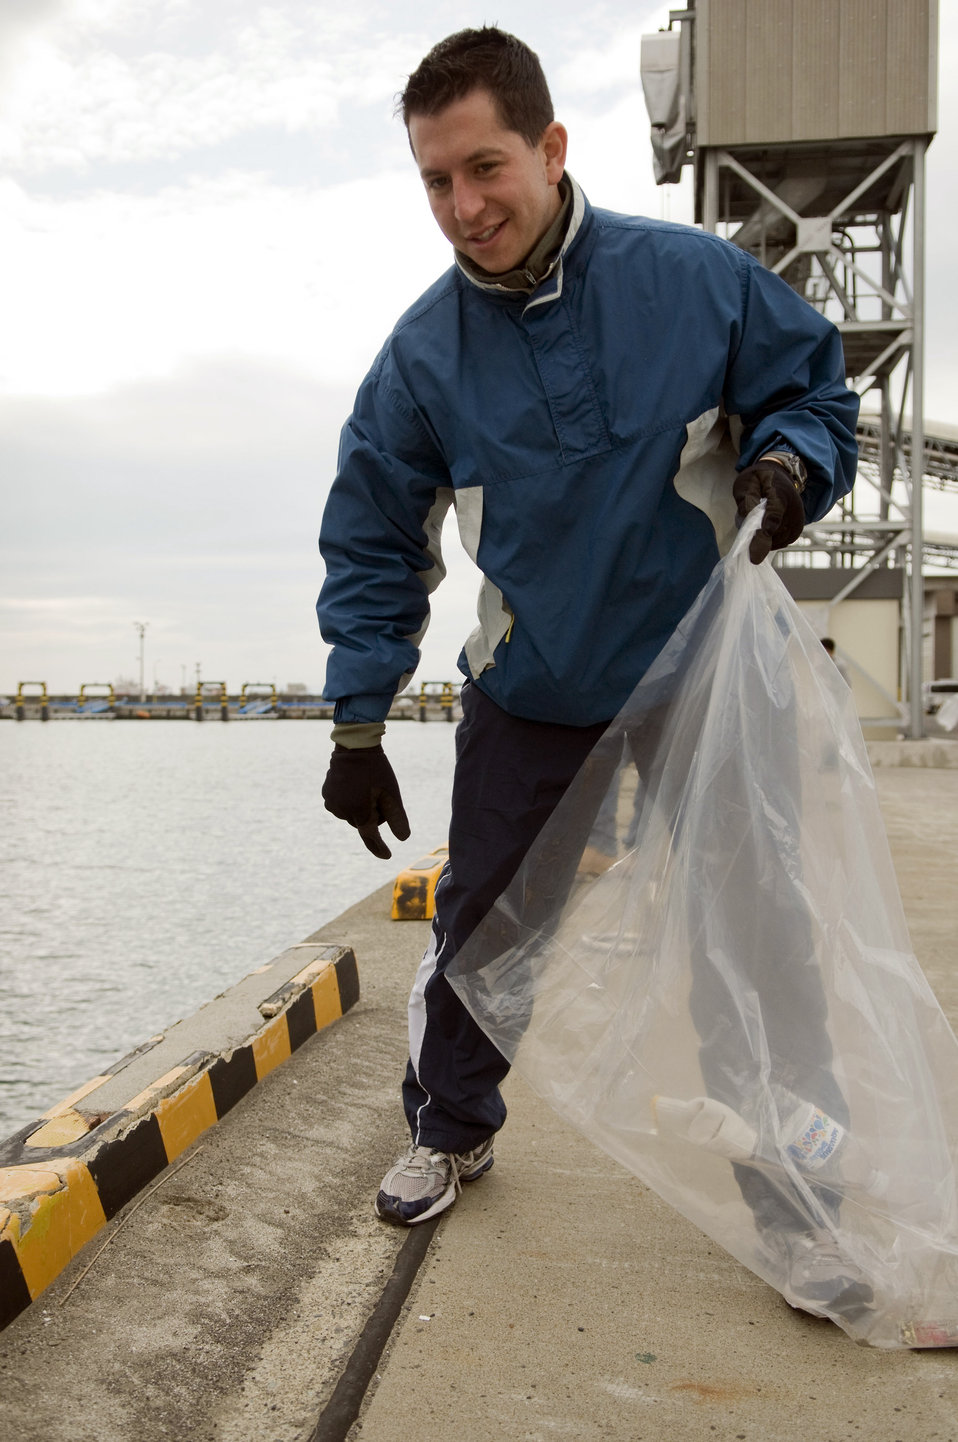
Misawa servicemembers, Japanese clean beach, port

Capt. Mario Tellez scans the area for trash along the Misawa port and beach, April 10, 2010, at Misawa Air Base, Japan. Captain Tellez is the 35th Civil Engineer Squadron Readiness and Emergency Management flight commander.